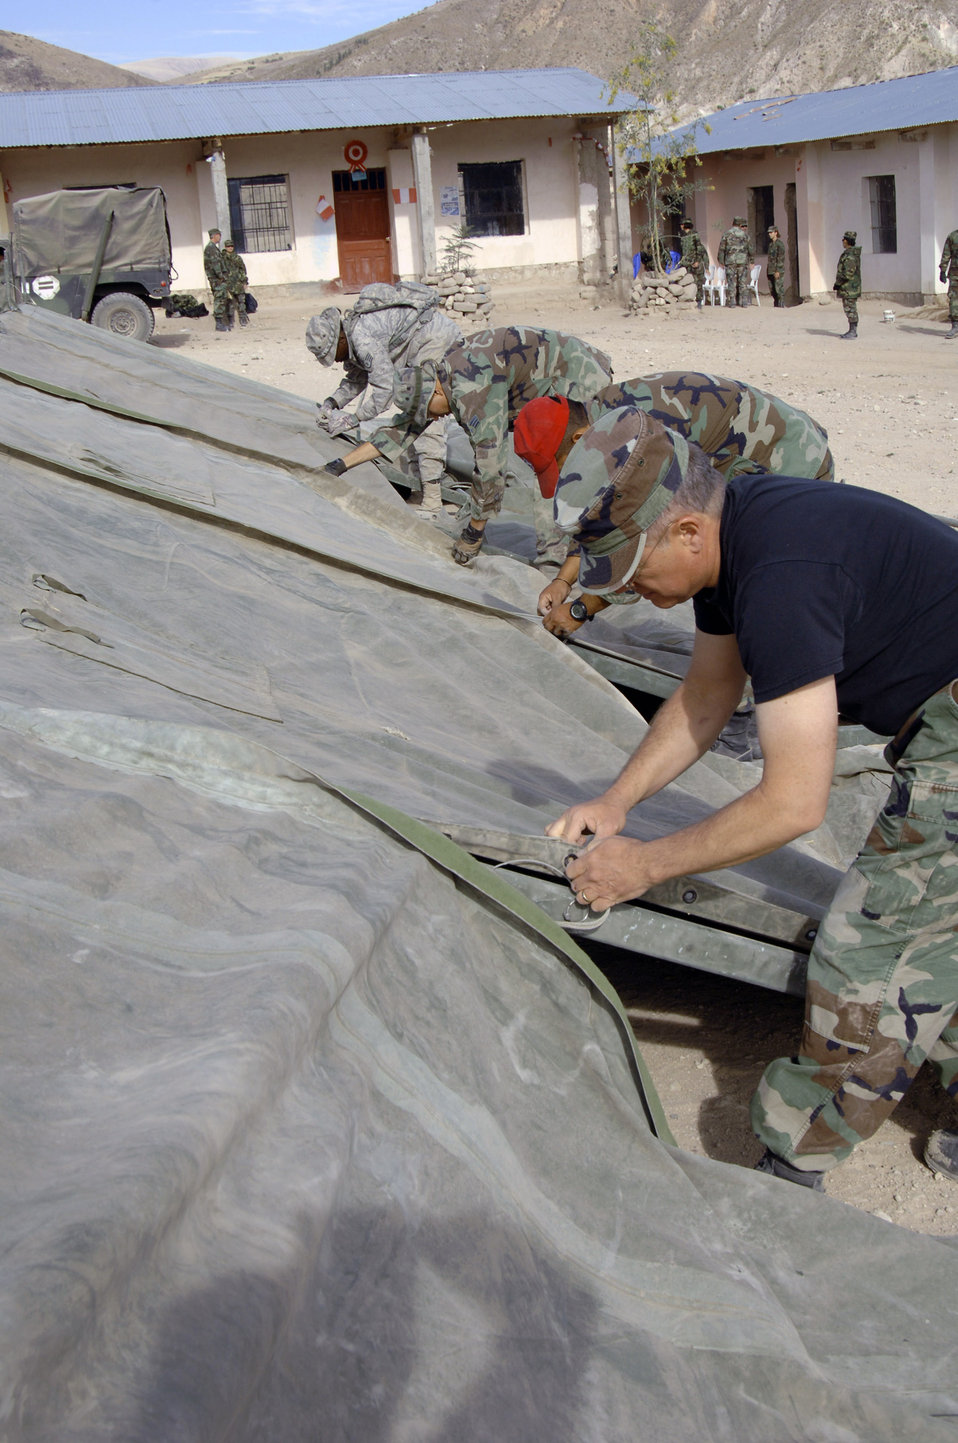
Despite reduced numbers, final New Horizons MEDRETE a success

Airmen from Task Force New Horizons assemble a tent in preparation for a medical mission in Mollepata, Peru, Aug. 1. New Horizons - Peru 2008 is a humanitarian mission partnered effort between the U.S. and Peru to bring quality-of-life construction projects and medical missions to underiviliged Peruvians.